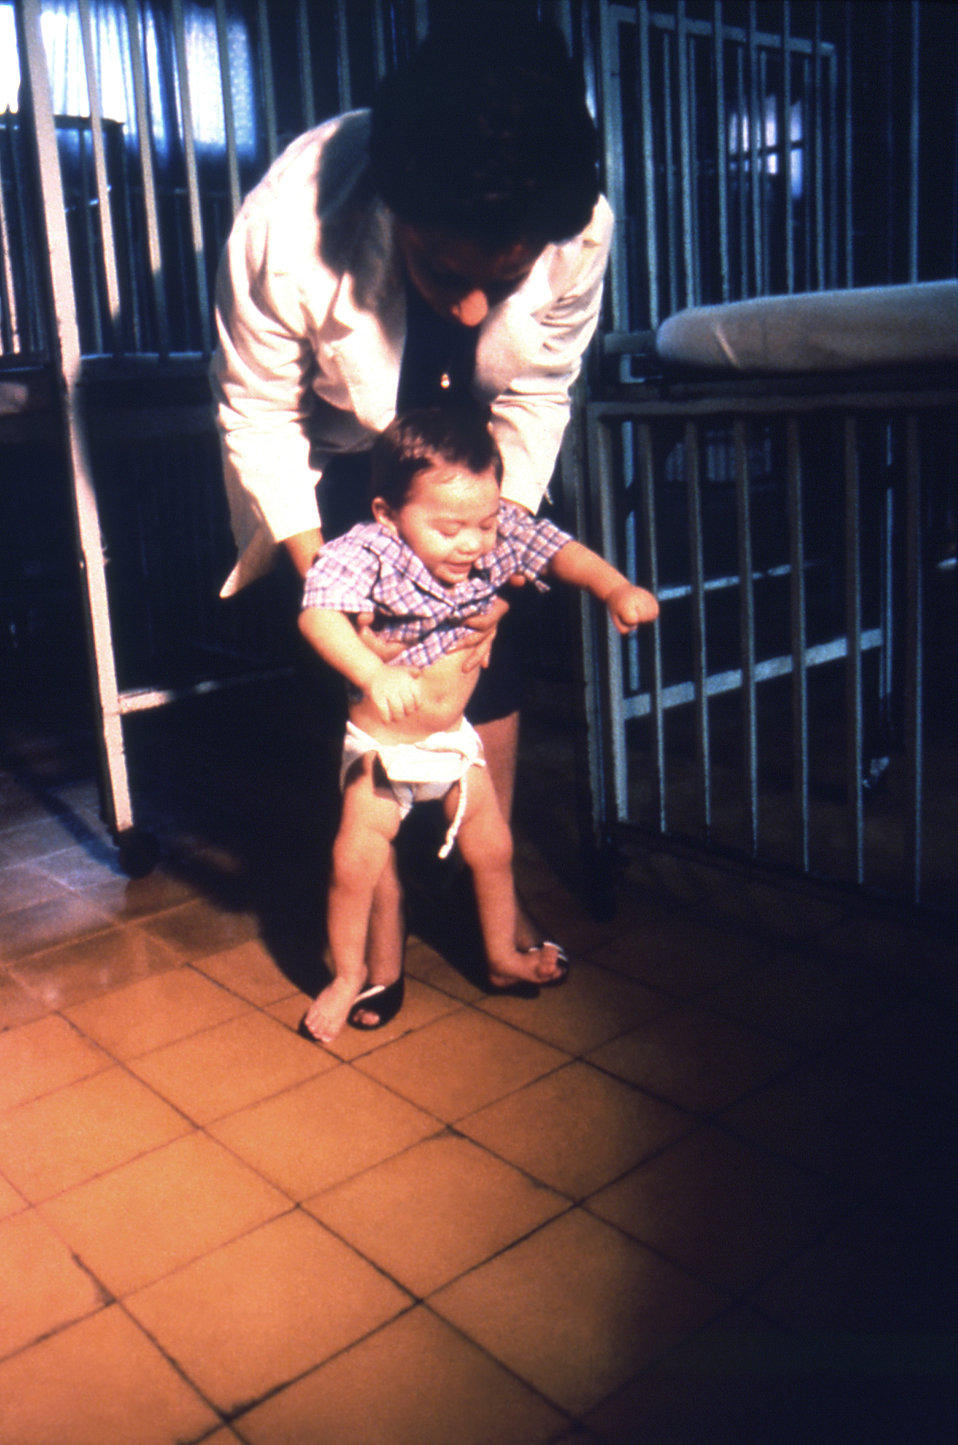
Captured in an unknown Latin-American country, this 1989 image shows a healthcare worker supporting an infant, who was at an age where he should have been able to walk, however, due to his having acquired the poliovirus, his subsequent lower limb paralysis made him unable to support his own weight.